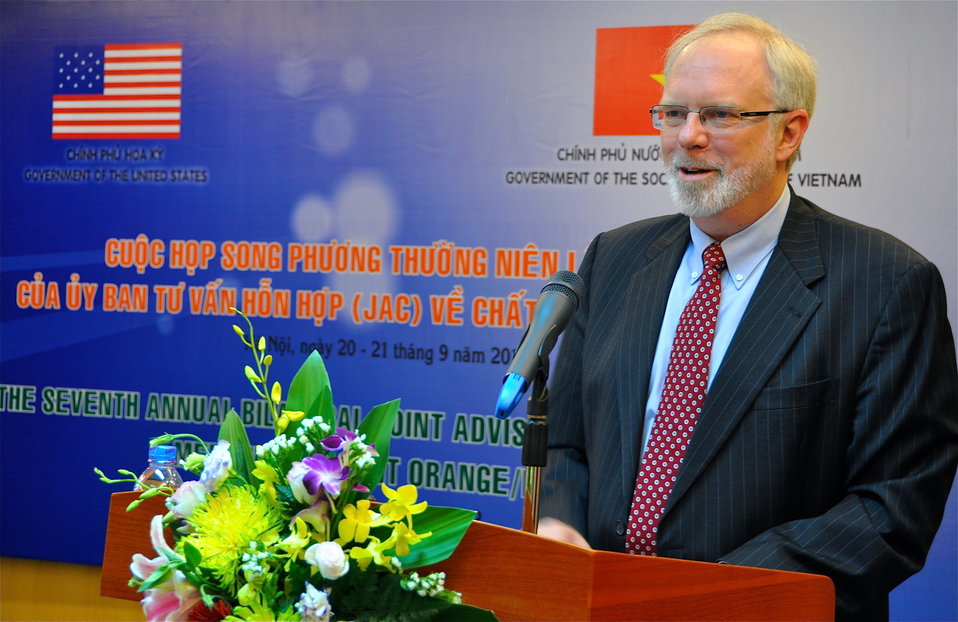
U.S. Ambassador David B. Shear at the Seventh U.S.-Vietnam Advisory Committee Meeting (JAC)

Hanoi, September 20, 2012